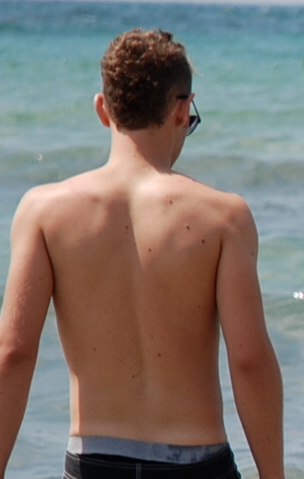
עברית: גב